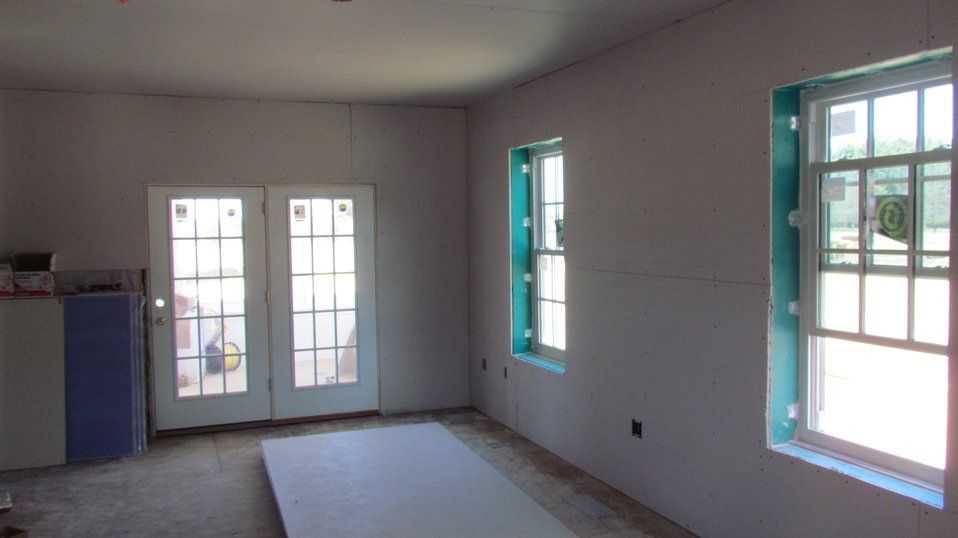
Drywall installed on first floor of NZERTF.